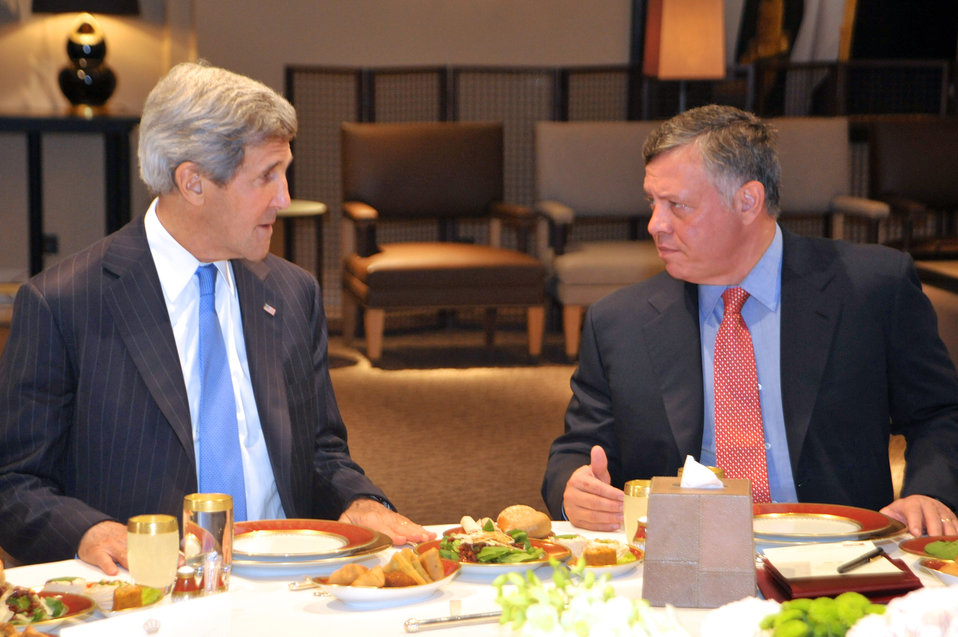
Secretary Kerry Chats With King Abdullah II

U.S. Secretary of State John Kerry chats with King Abdullah II before a working lunch at Al-Hummar Palace in Amman, Jordan, on June 27, 2013.